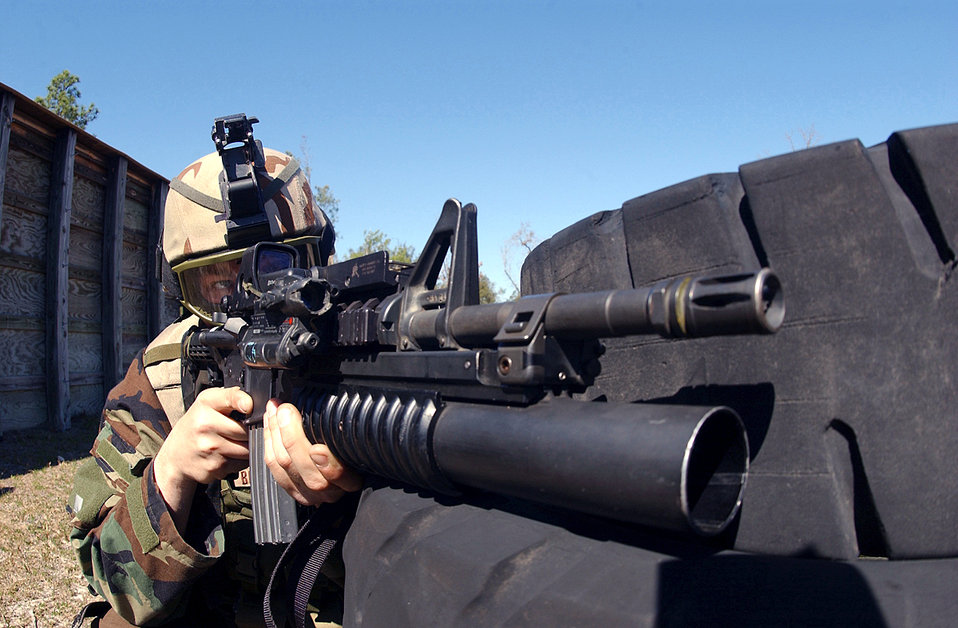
Security forces training

Airman Robert Blessing prepares to enter an abandoned house for pre-deployment training at Camp Blanding, Fla., Wednesday, Feb. 15, 2006. The training helps Airmen hone their skills through realistic combat scenarios. The Airman is with the 824th Security Forces Squadron at Moody Air Force Base, Ga.